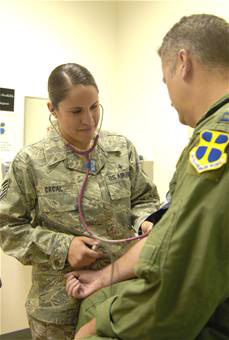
Enlisted Airman diagnoses, treats patients

Tech. Sgt. Julianne Cacal checks a patient's blood pressure July 27 at Edwards Air Force Base, Calif. Sergeant Cacal is a 95th Aerospace Medicine Squadron independent duty medical technician, and diagnoses and treats servicemembers under the license of a supervising doctor.